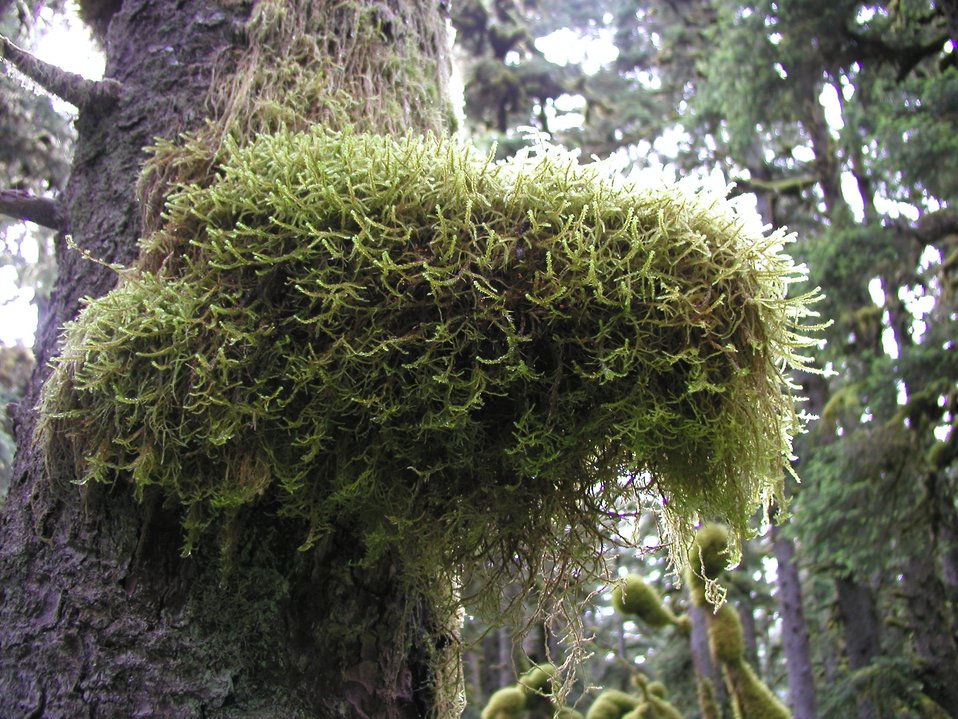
Moss covering part of tree in the rain forest environment of Spruce Island